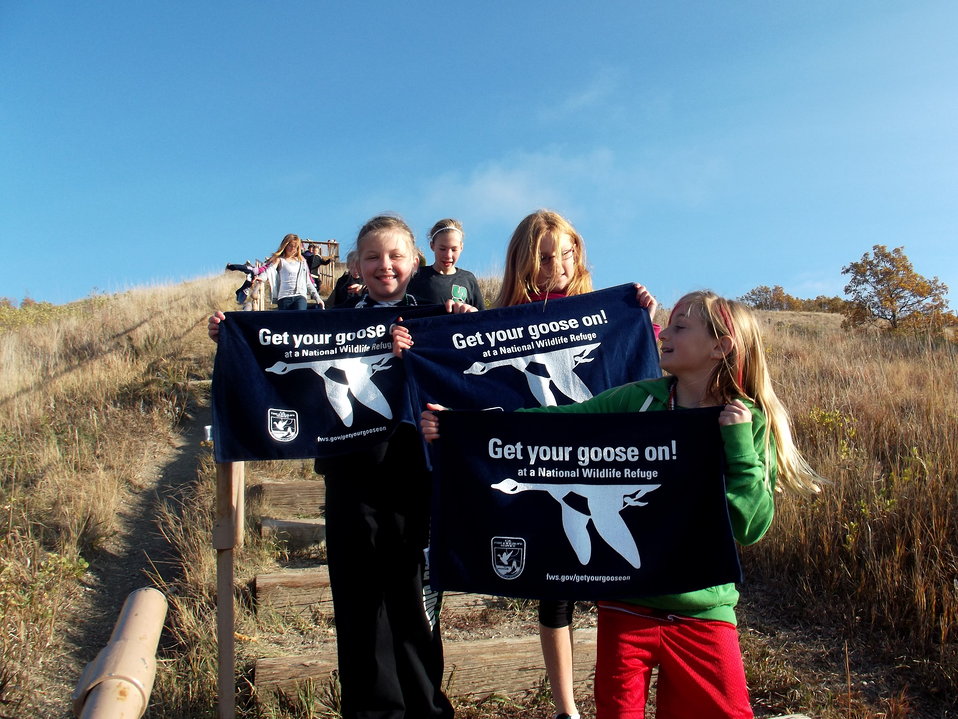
Get Your Goose On!

Photo taken at Sullys Hill National Game Preserve.